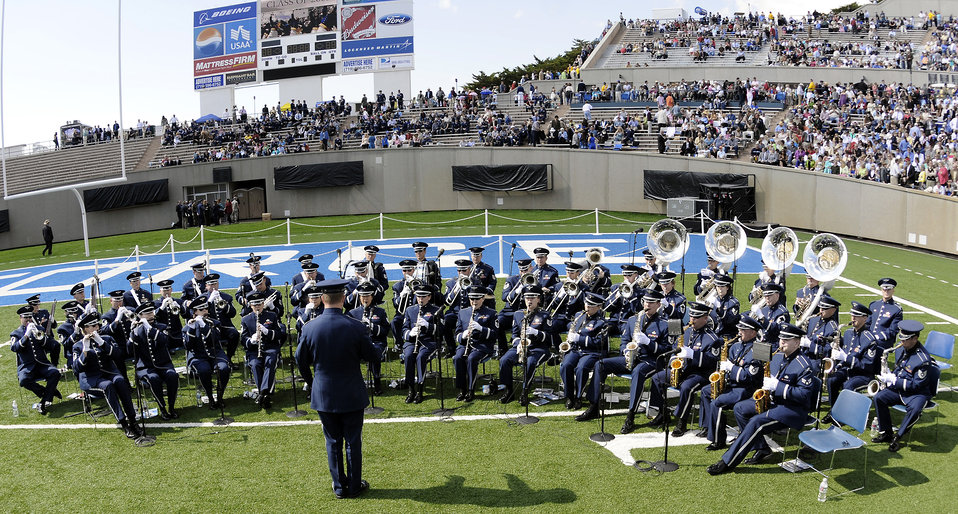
2009 U.S. Air Force Academy graduation

The U.S. Air Force Academy Band plays to an estimated crowd of 33,000 during the Academy Class of 2009 graduation ceremony May 27 at Falcon Stadium. Vice President Joe Biden was the commencement speaker.